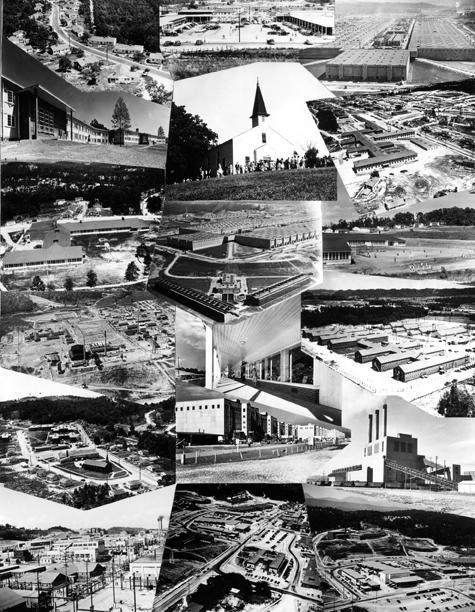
Map Oak Ridge Y-12